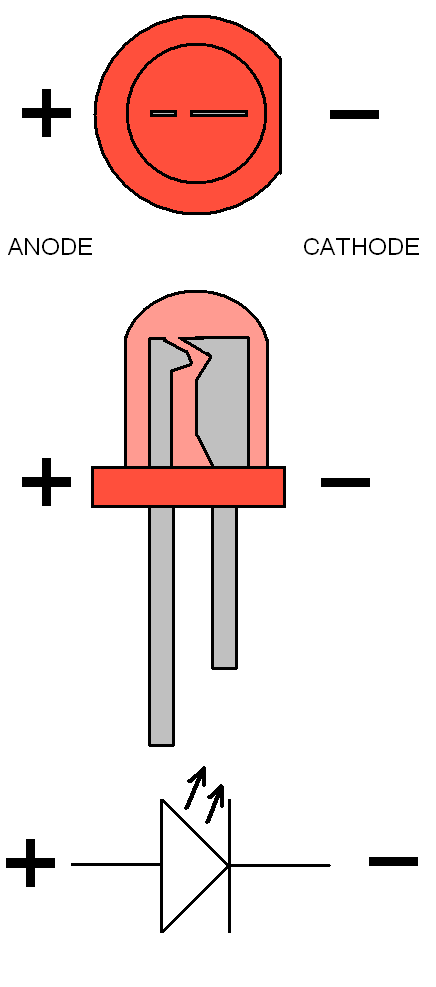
Anode and cathode of LEDs. LEDの極性。